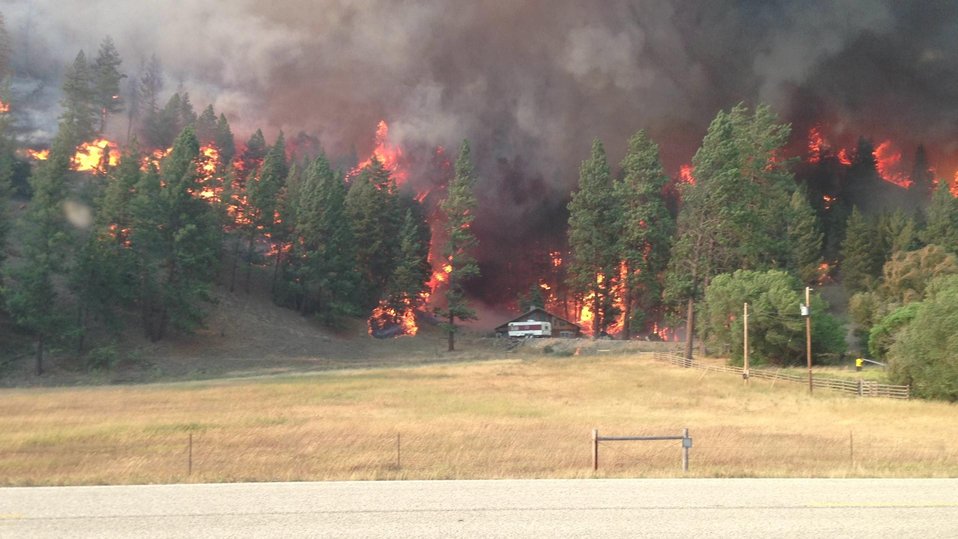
The Lolo Creek Fire in the Lolo National Forest near Lolo, MT began on Aug. 18, 2013 by lightning has consumed approximately 10,892 acres and is 47% contained.